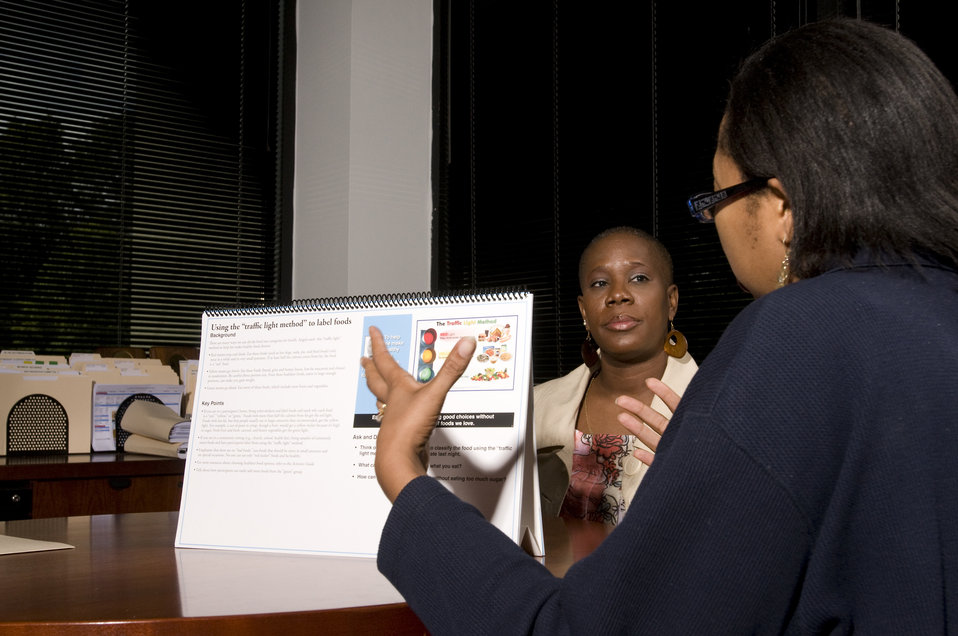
This image depicts a person with diabetes in the background listening to a community health worker familiar with the necessary diet needed to maintain control over the detrimental effects of this disease. The health worker was using a flip chart that, for the moment, was turned to a page discussing the use of the 'Traffic Light Method' to label foods.